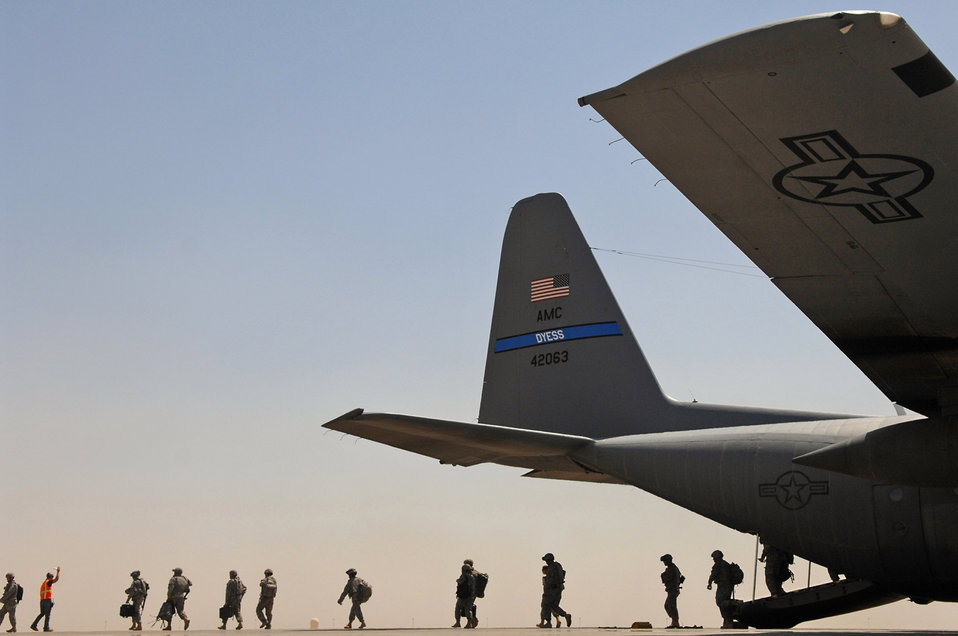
Herculean support for convoys

Servicemembers exit a C-130 Hercules May 10 at Balad Air Base, Iraq. Members of the 777th Expeditionary Airlift Squadron help prevented convoy vehicles and servicemembers from traveling along improvised explosive device-laden Iraqi roads by airlifting troops and supplies throughout the area of operations.